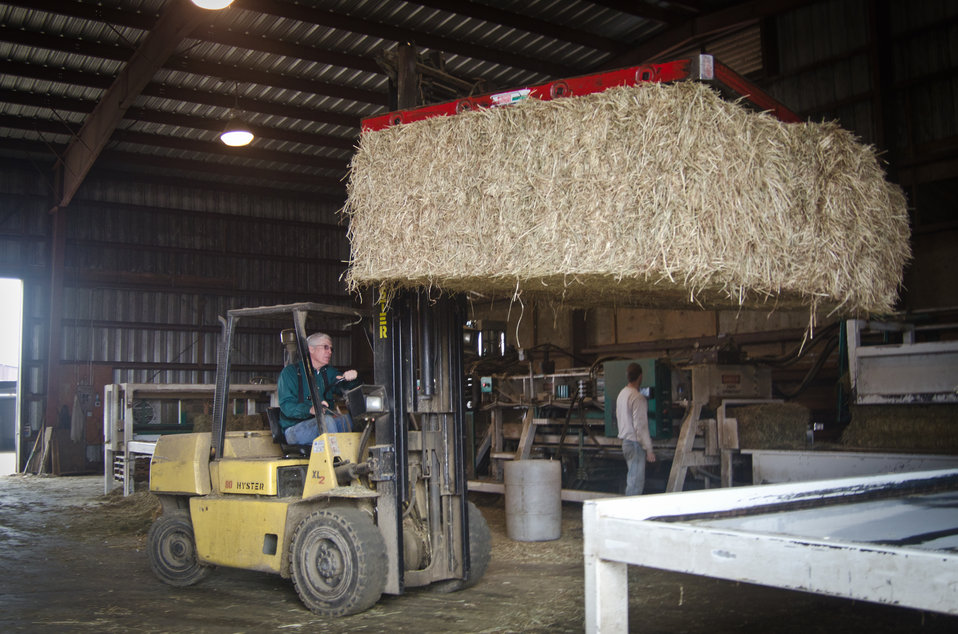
Uncompressed hay bales are loaded onto the hay compactor feeder at Heidel Hollow Farms on Wednesday, April 20, 2011. A family owned farm, since 1852 and is an 1,800 acre operation in Germansville, PA. Led by David Fink, President of Heidel Hollow Farms, they mainly produce and compact hay for export and grow produce on 300 acres for local sale. With the financial help of the U.S. Department of Agriculture (USDA) an 896 panel solar array was recently installed on non farmable diversion ditches. Rated at 200 kilowatts, they project 240 megawatts of electricity to be produced each year, providing up to 70% of the farms electrical needs. Additionally, USDA financial assistance made it possible to replace the hay compactor’s diesel engines with clean low-maintenance, low operating cost electric motors to power the compactor's hydraulic system. The compactor increases the density of baled hay by two and half times for more efficient shipping to overseas customers.